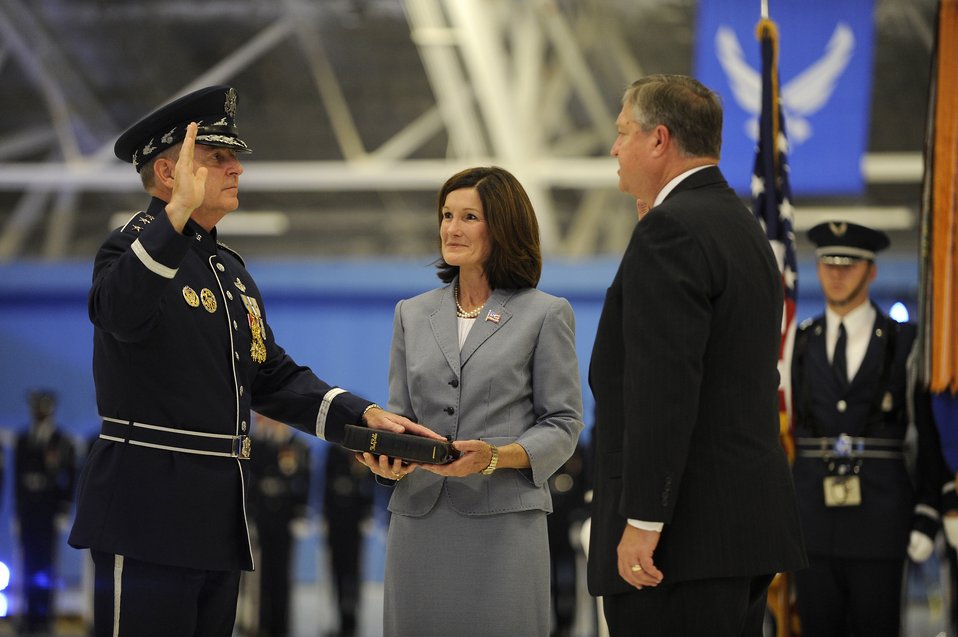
Welsh ‘humbled’ to serve as Air Force chief of staff

Secretary of the Air Force Michael Donley swears in Gen. Mark A. Welsh III as the 20th Air Force chief of staff, assisted by Welsh's wife, Betty, during a ceremony at Joint Base Andrews, Md., Aug. 10, 2012.